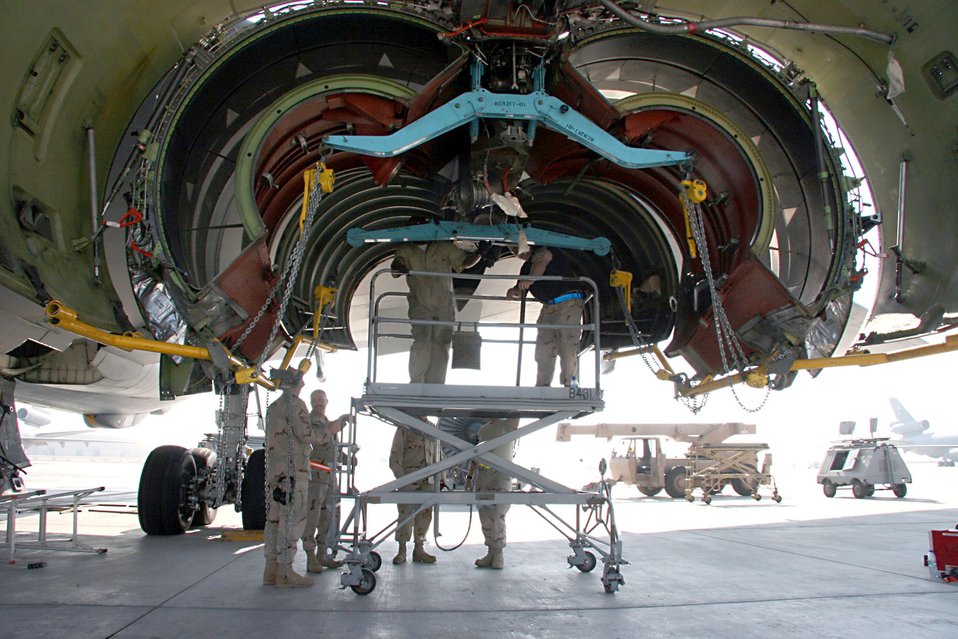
Desert KC-10 Engine Change

Maintainers from the 380th Expeditionary Aircraft Maintenance Squadron at an air base in Southwest Asia inspect the engine nacelle cowling of a KC-10 Extender Nov. 23 after removing a damaged engine.